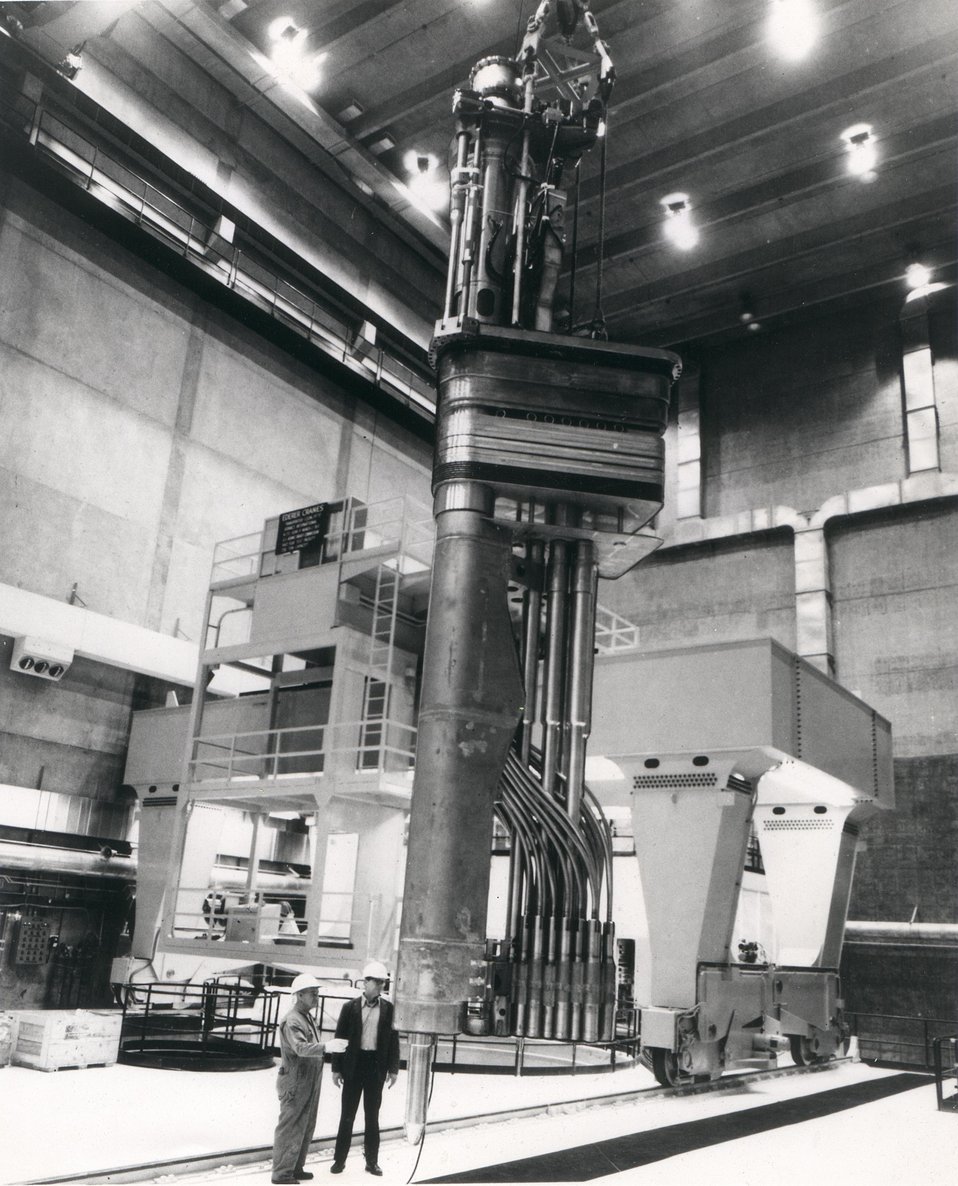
Weighing in at 45 tons, this stainless steel Instrument Tree arrived for tests and evaluation in the High Temperature Sodium Facility. c. 1974.